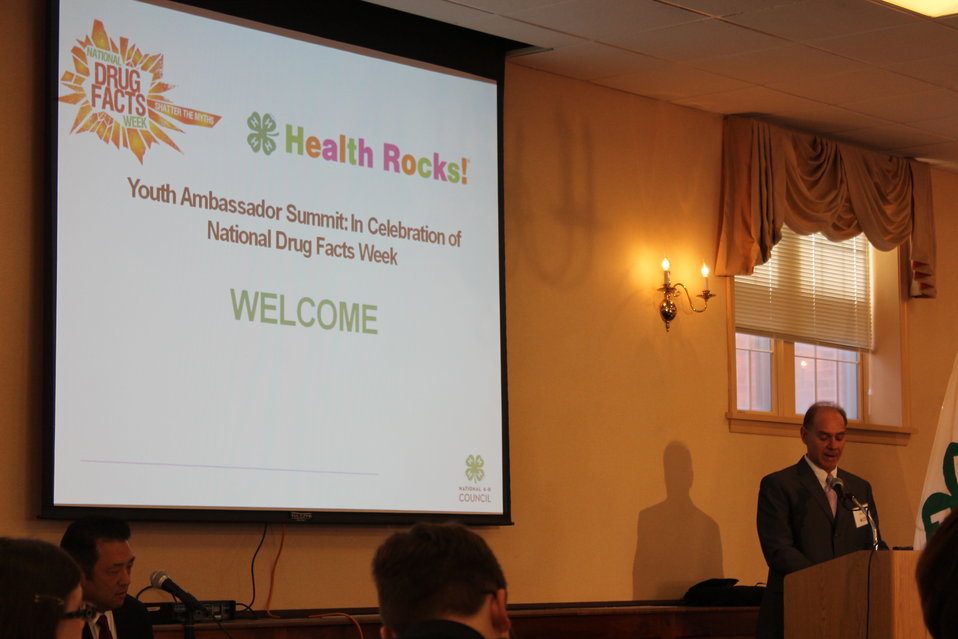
4-H Event

National 4-H Council Hosts Youth Summit to Celebrate National Drug Facts Week